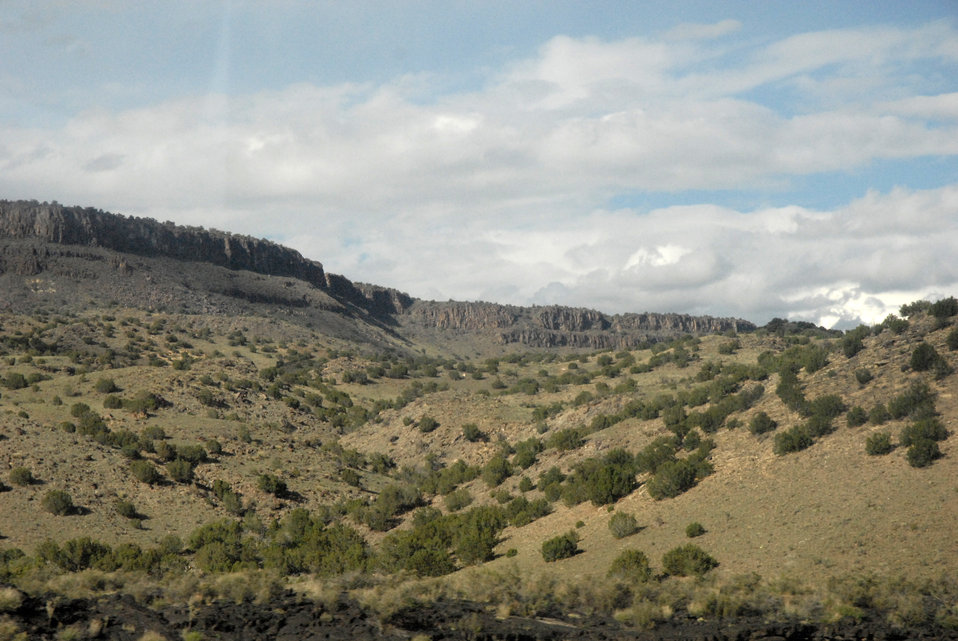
Impressive rock formations were visible while traveling along interstate US 40 in New Mexico on September 9, 2008.